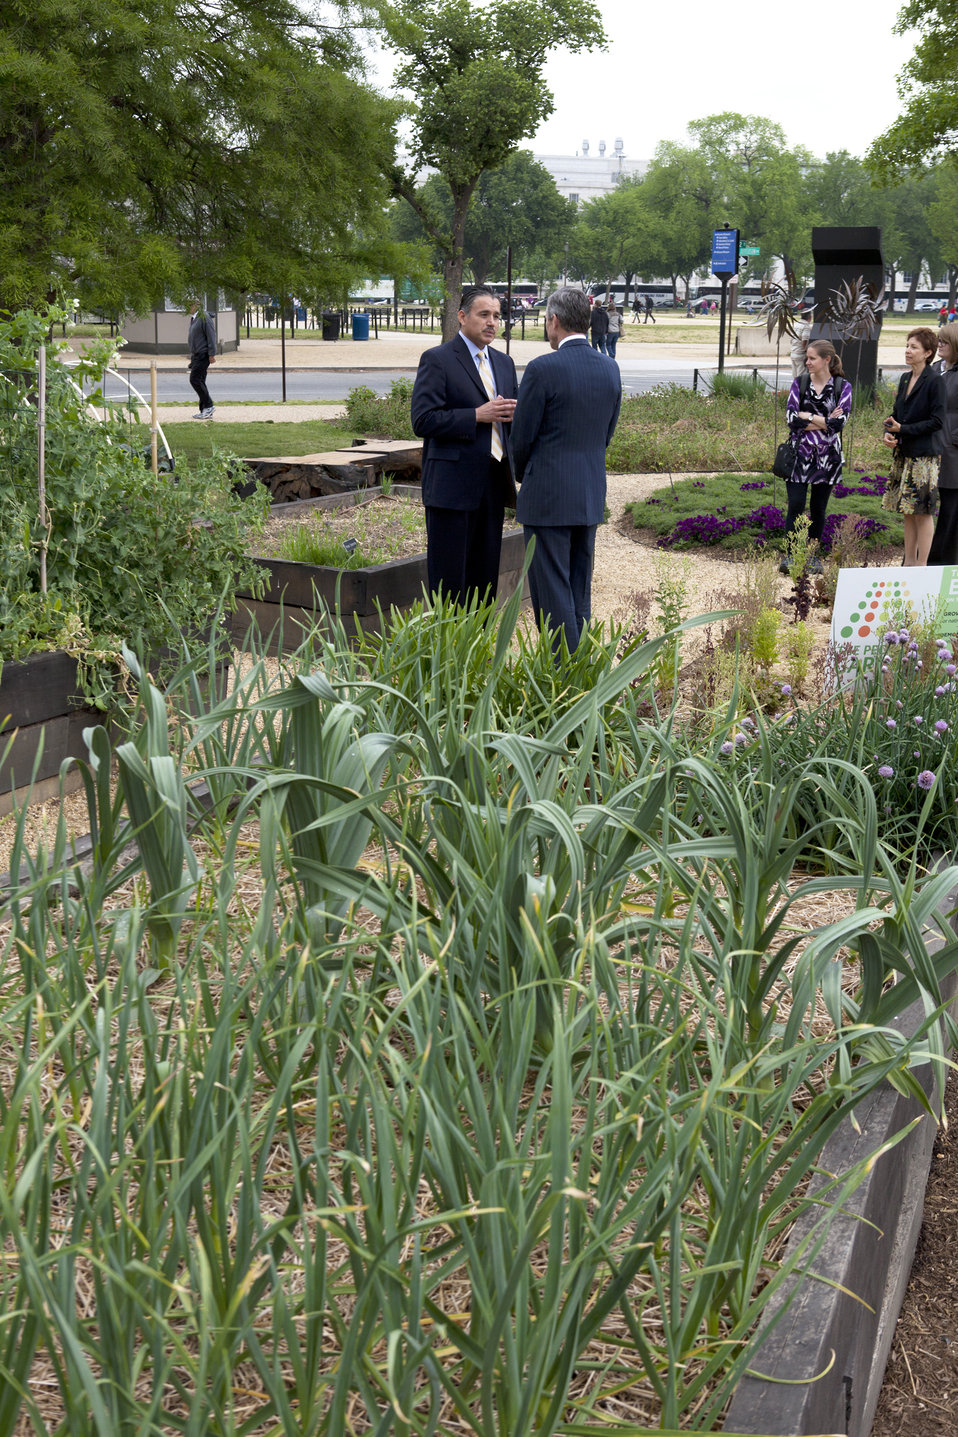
Agriculture Deputy Assistant Secretary for Administration Oscar Gonzales Jr. (left) and Keep America Beautiful (KAB) President Matthew McKenna stand in the People’s Garden at the U.S. Department of Agriculture, Whitten Building in Washington, D.C., on Thursday, April 25, 2012 discussing the People’s Garden Initiative. The Initiative’s success is due to the support of partners like KAB who are working towards the same goals. KAB’s national affiliates have established 600 of the nearly 1700 People’s Gardens in a multitude of diverse American communities.